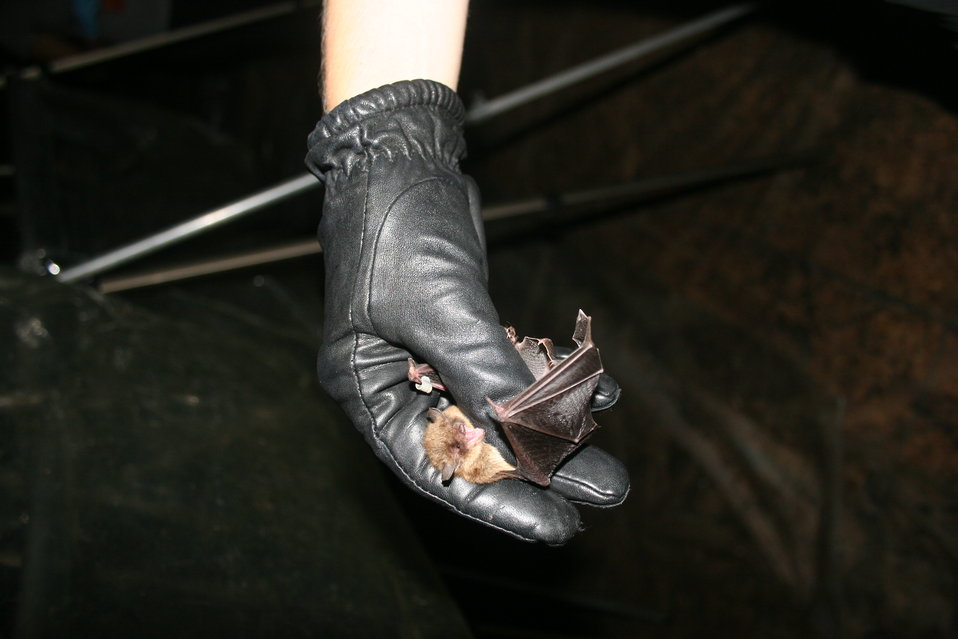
little brown bat

Biologist holds a little brown bat captured in a harp trap.